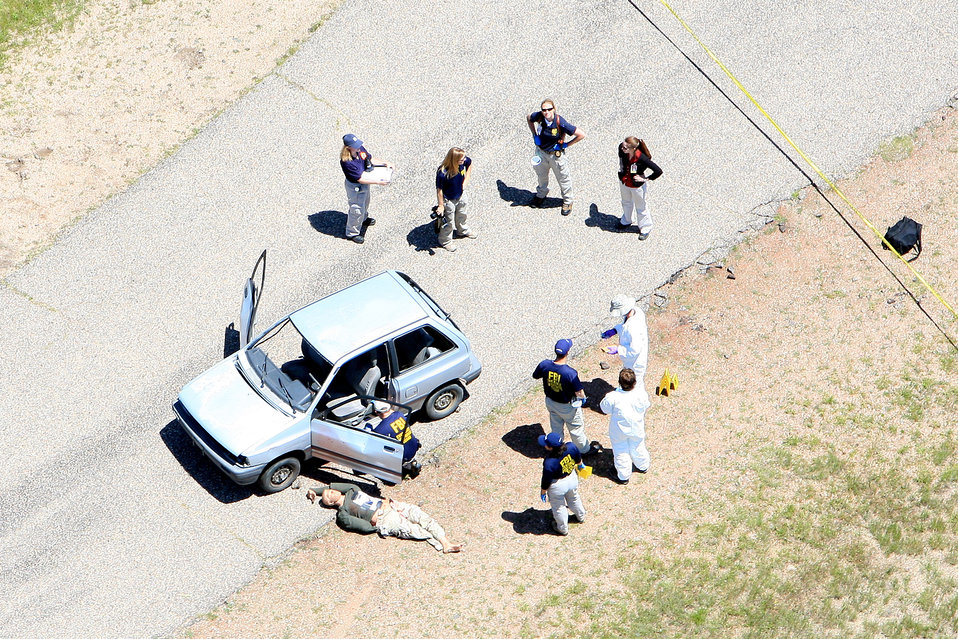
F.E. Warren officials host national-level exercise

The FBI evidence response team investigates the mock aggressor vehicle during the Nuclear Weapon Accident/Incident Exercise 2009 June 22 at F.E. Warren Air Force Base, Wyo. The continuous 72-hour exercise tested the military's ability to coordinate, cooperate and communicate with other interagency departments and federal, state and local emergency services.